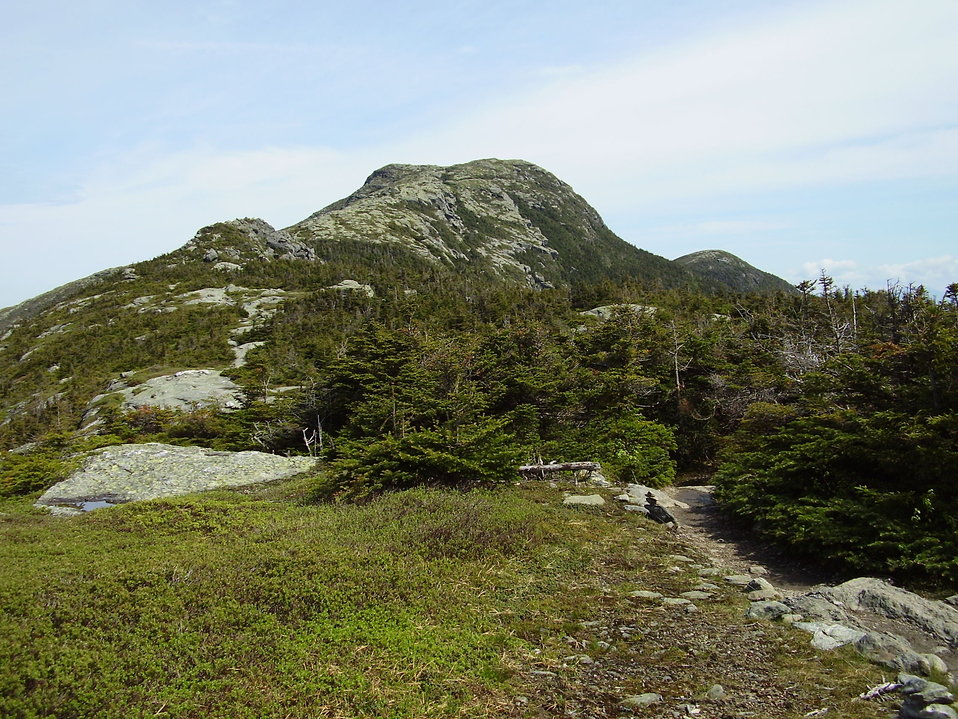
The view of Mansfield's summit from the Long Trail. Photo by: Joe Calzarette Date: June 7, 2007